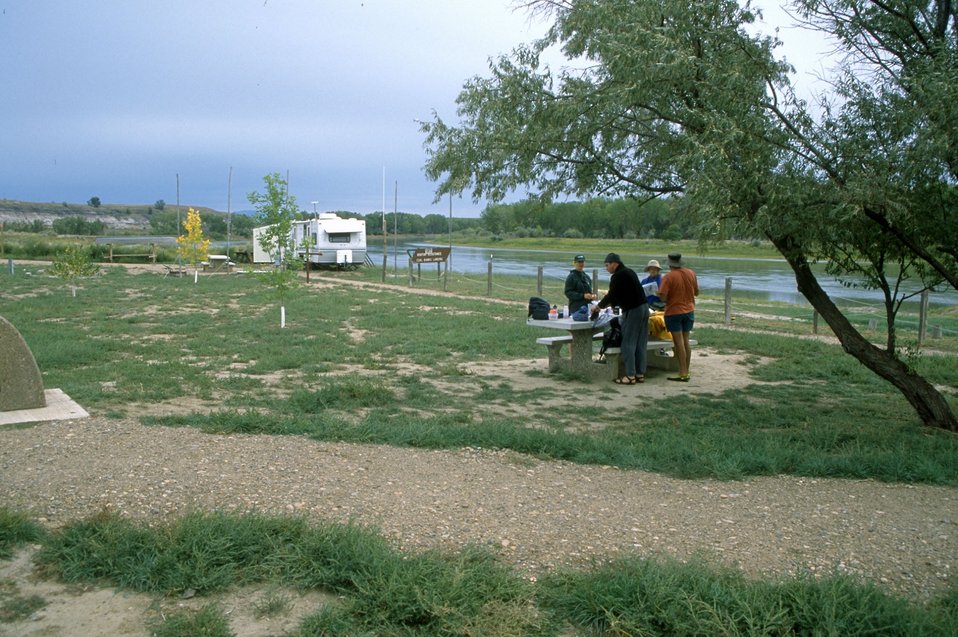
Visitor use at Coal Banks Landing on the Upper Missouri River